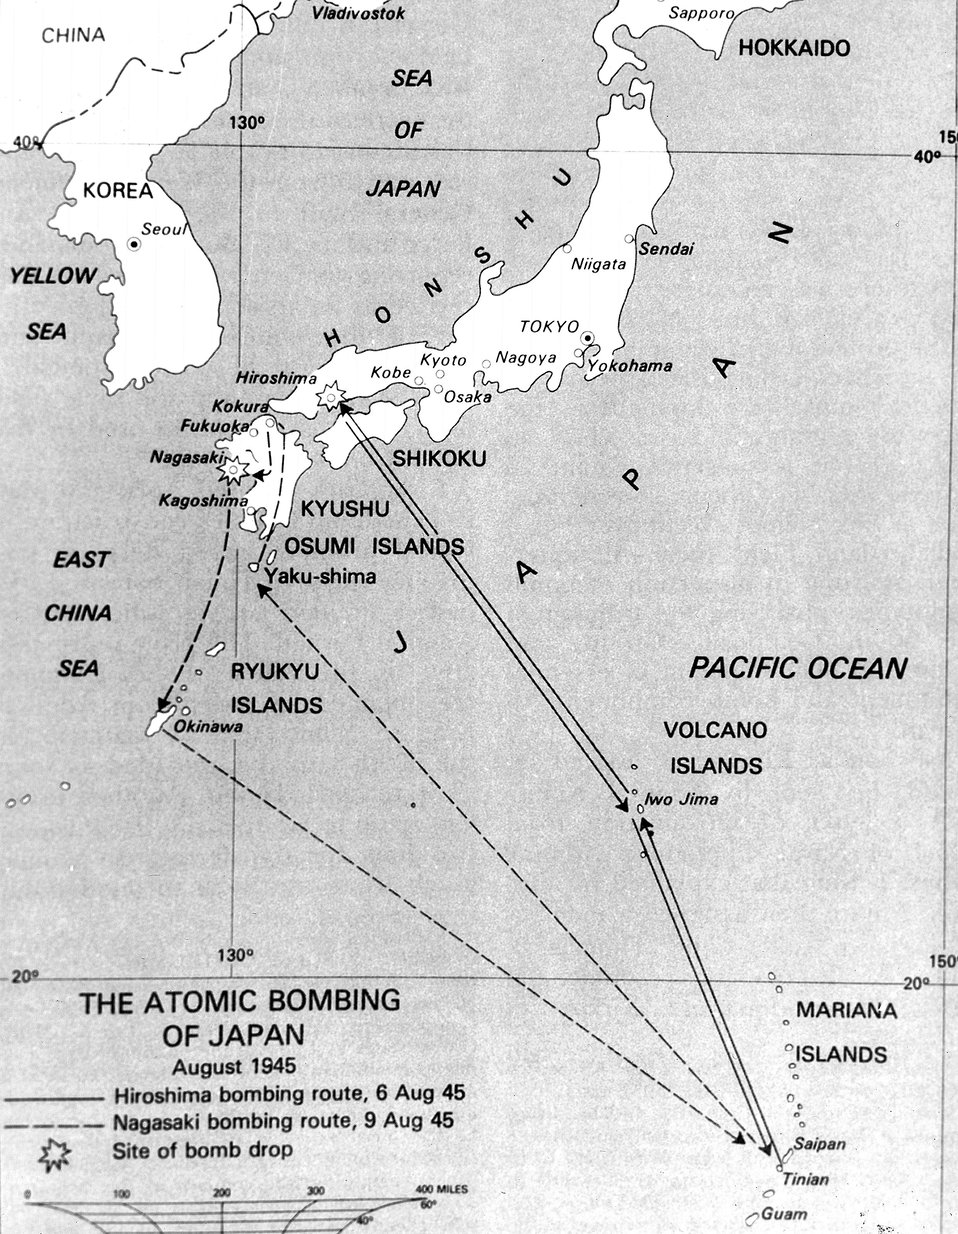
Atomic bombing of Japan.